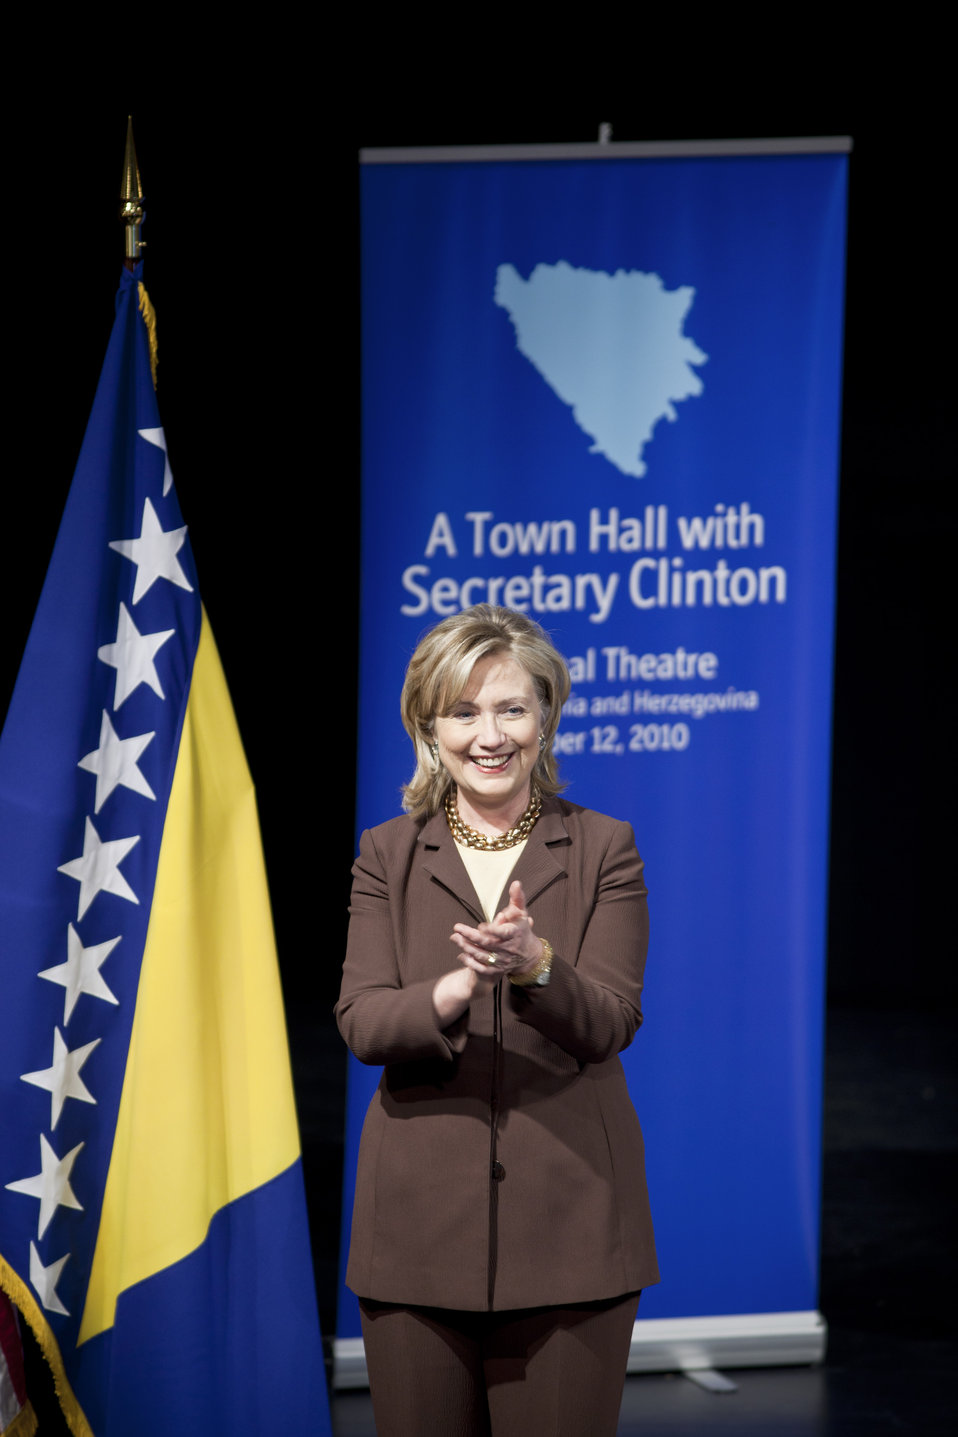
Secretary Clinton Holds a Town Hall

U.S. Secretary of State Hillary Rodham Clinton holds a town hall meeting with university students and civil society representatives, at the National Theater, in Sarajevo, Bosnia and Herzegovina, on October 12, 2010.